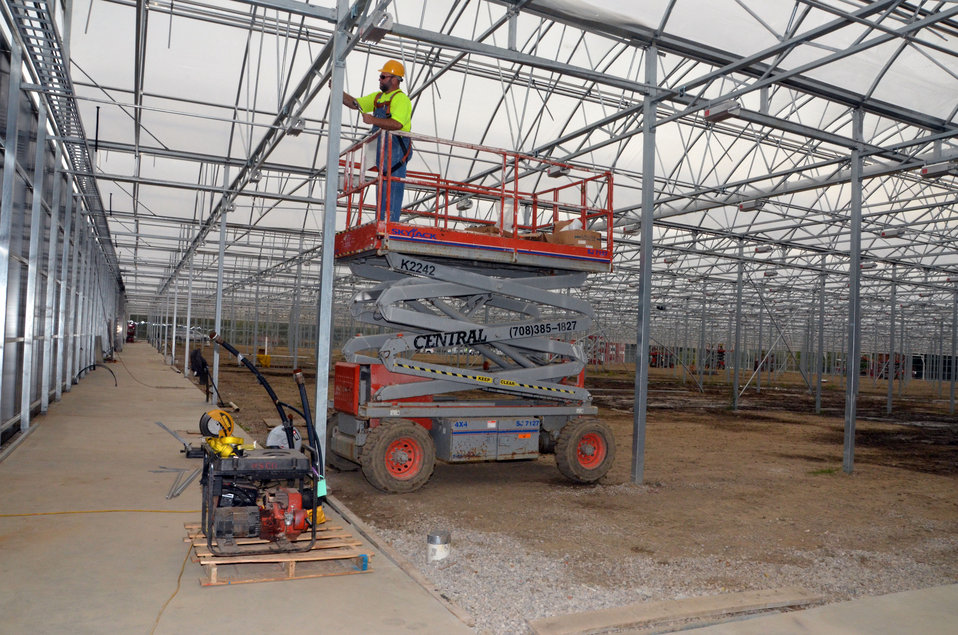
Green City Growers Cooperative greenhouse in Cleveland, Ohio is scheduled to open November, 2012.